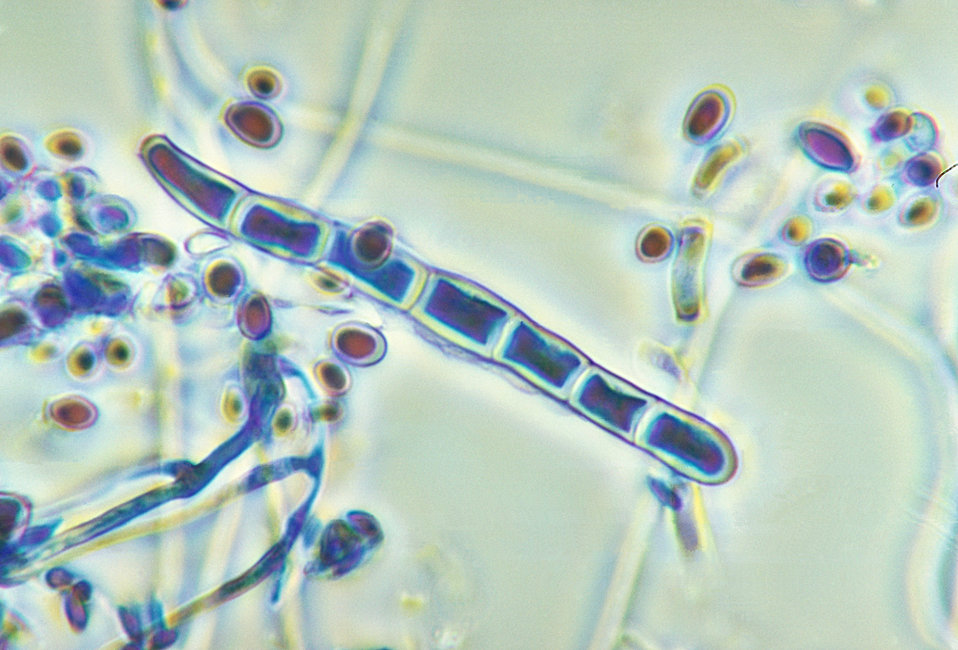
Magnified 1125X, this micrograph reveals both a macroconidium and some microconidia of the fungus Trichophyton rubrum var. rodhaini.